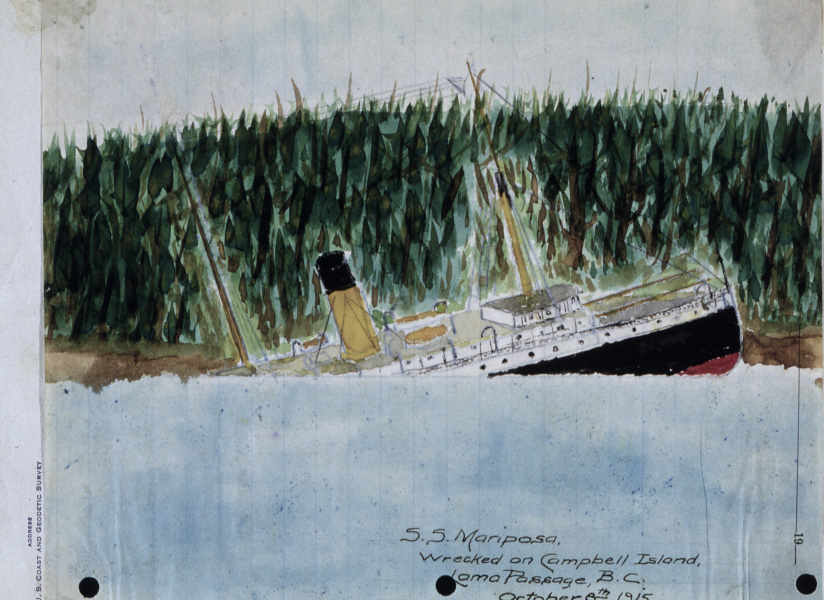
Wreck of S.S. MARIPOSA. Watercolor by Gilbert T. Rude, October 8, 1915.